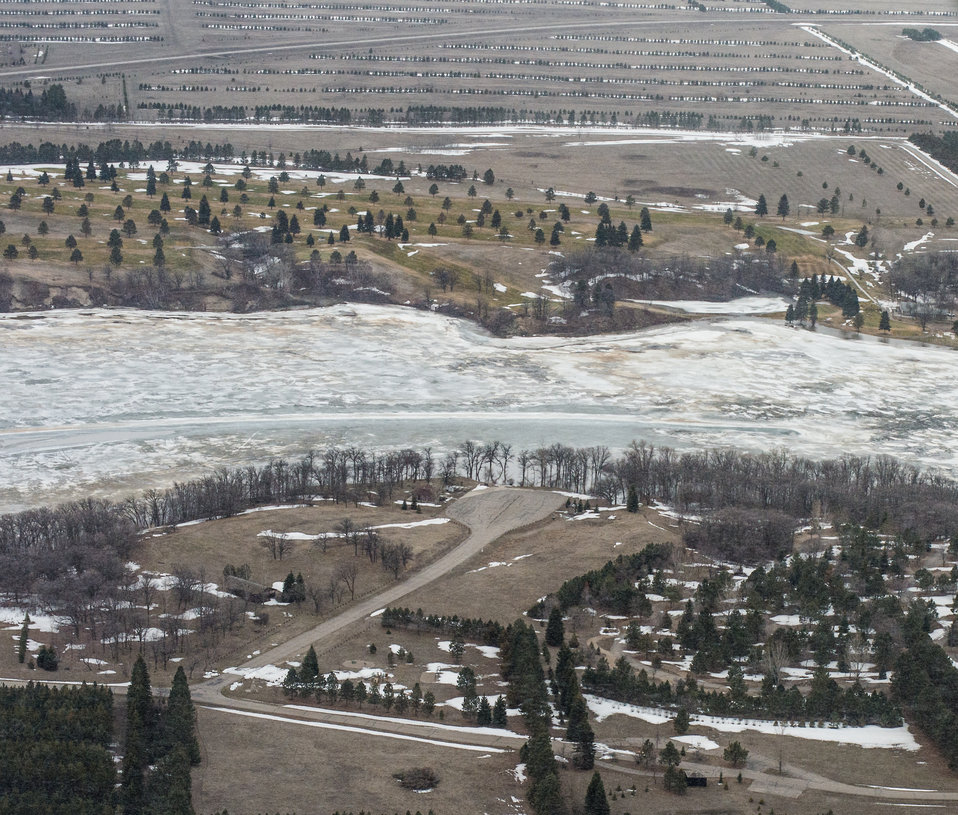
Renwick Dam, in Pembina County, ND, part of the Red River basin, on Wednesday, May 1, 2013. For information about this and other programs from the USDA Red River Basin Initiative (RRBI) please see www.mn.nrcs.usda.gov/news/features13/RRBI.html.